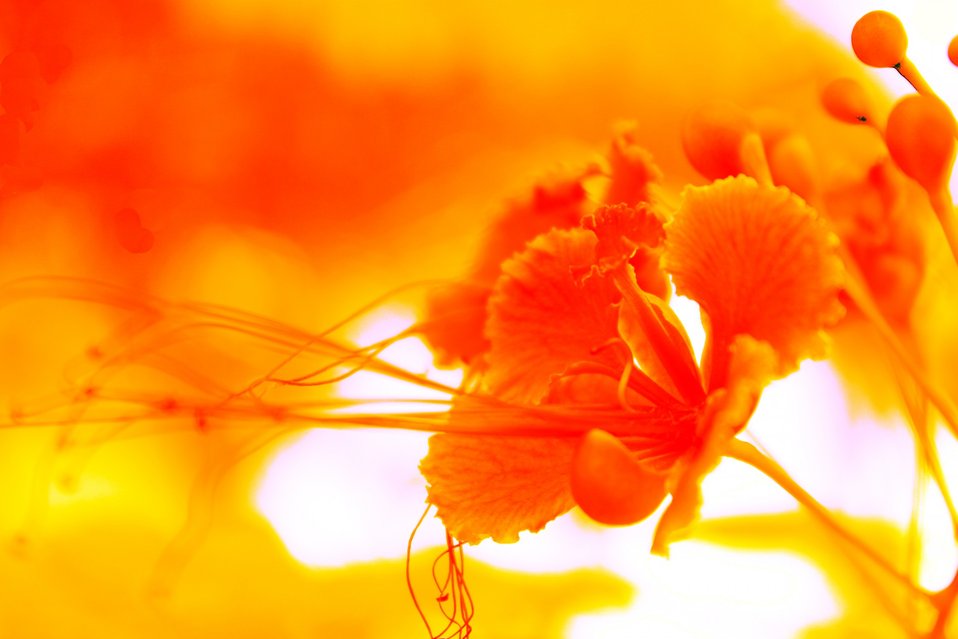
Yellow background and flower.